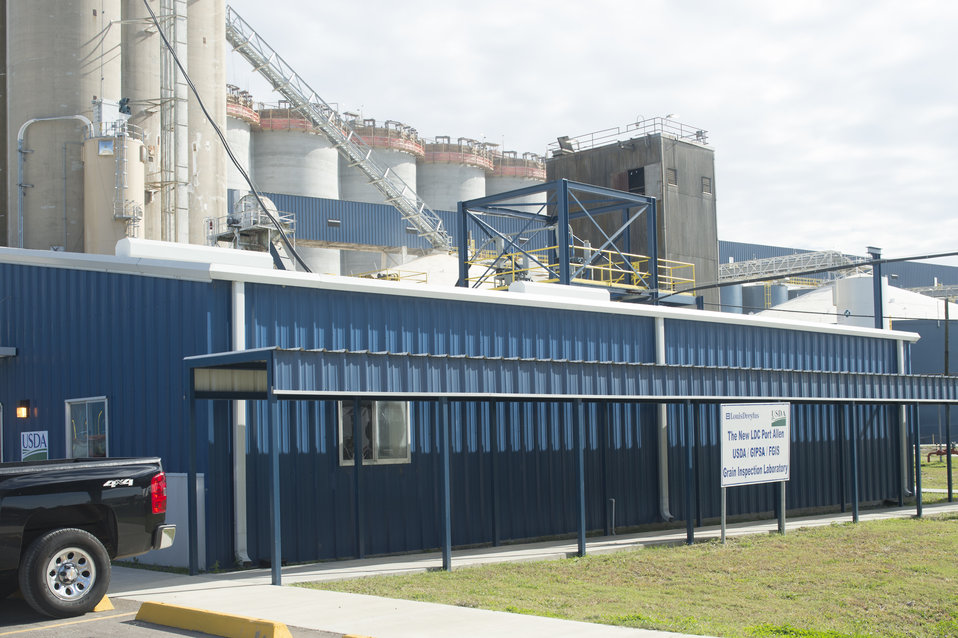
Grain is transferred from barges to holding tanks and tested in preparation for export near the port of New Orleans, LA on Tuesday, Nov. 19, 2013.